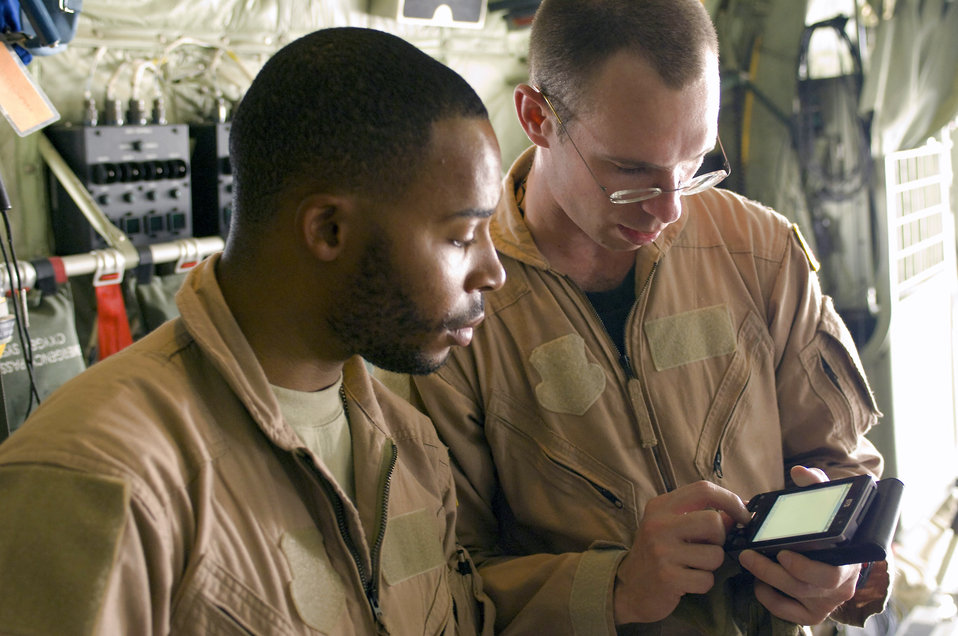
Airframes transform to 'aerovac'

Staff Sgt. Elliot Dozier (left) and Capt. Matthew Rist (right) look up information on a personal digital assistant inside a C-130 Hercules July 8 at Bagram Air Field, Afghanistan. Sergeant Dozier and Captain Rist are deployed to the 455th Expeditionary Aeromedical Evacuation Flight from the 375th Aeromedical Evacuation Squadron at Scott Air Force Base, Ill.